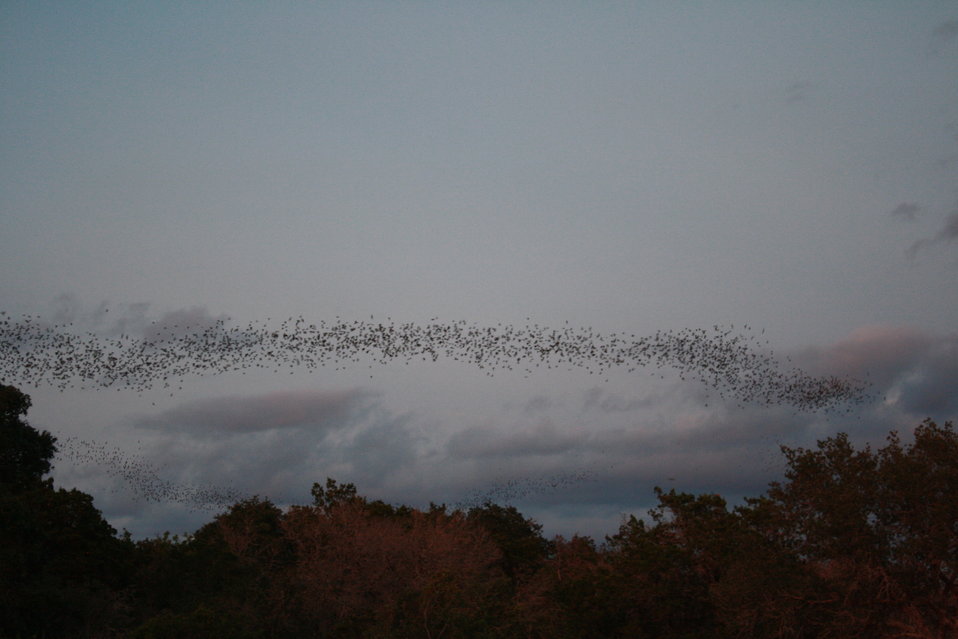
Mexican free-tailed bats exiting Bracken Bat Cave